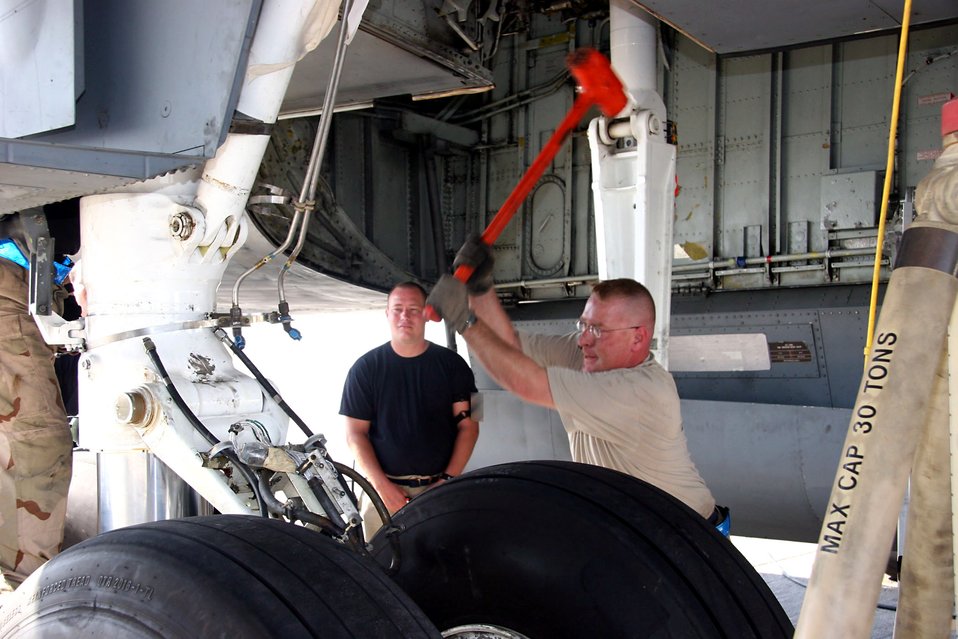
KC-135 Strut Change

Tech. Sgt. Nathan Darnell (left) observes as Tech. Sgt. James Bernardo carefully lowers the main landing gear strut on a KC-135 Stratotanker to full extension using an 11.5 pound dead blow hammer Dec. 21. The Airmen are assigned to the 380th Expeditionary Aircraft Maintenance Squadron and deployed from the 22nd Aircraft Maintenance Squadron at McConnell Air Force Base, Kansas.